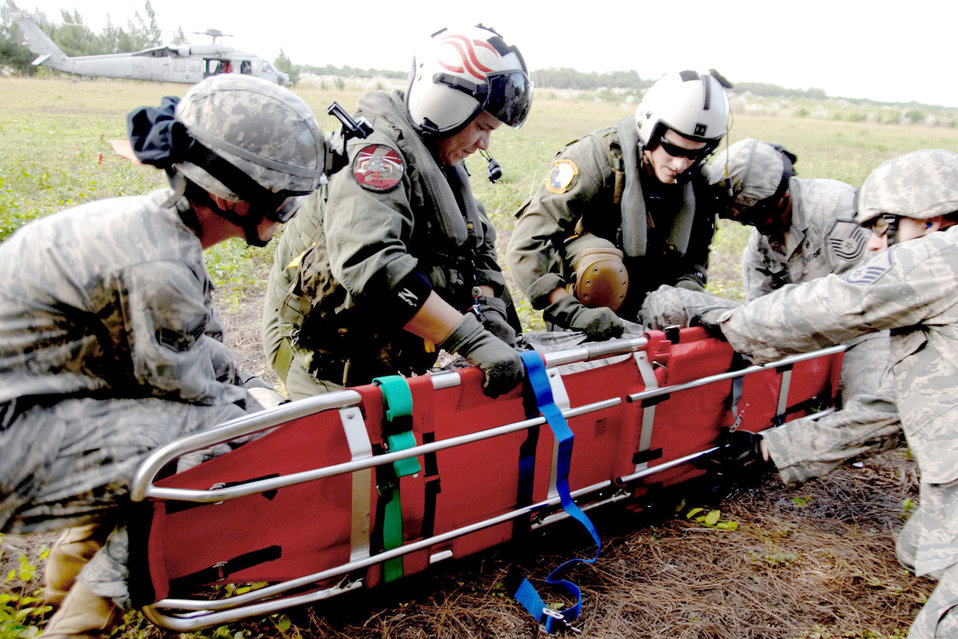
Airmen, Sailors train together for future relief efforts

Servicemembers assigned to the 36th Mobility Response Squadron and HSC-25 conduct medical evacuation training Oct. 13, 2010, at Northwest Field, Guam. The joint field training exercise was performed in an effort to interchange and familiarize themselves with each other's tactics, techniques and procedures to be able to interoperate and conduct joint humanitarian assistance/disaster relief missions in the Pacific region.